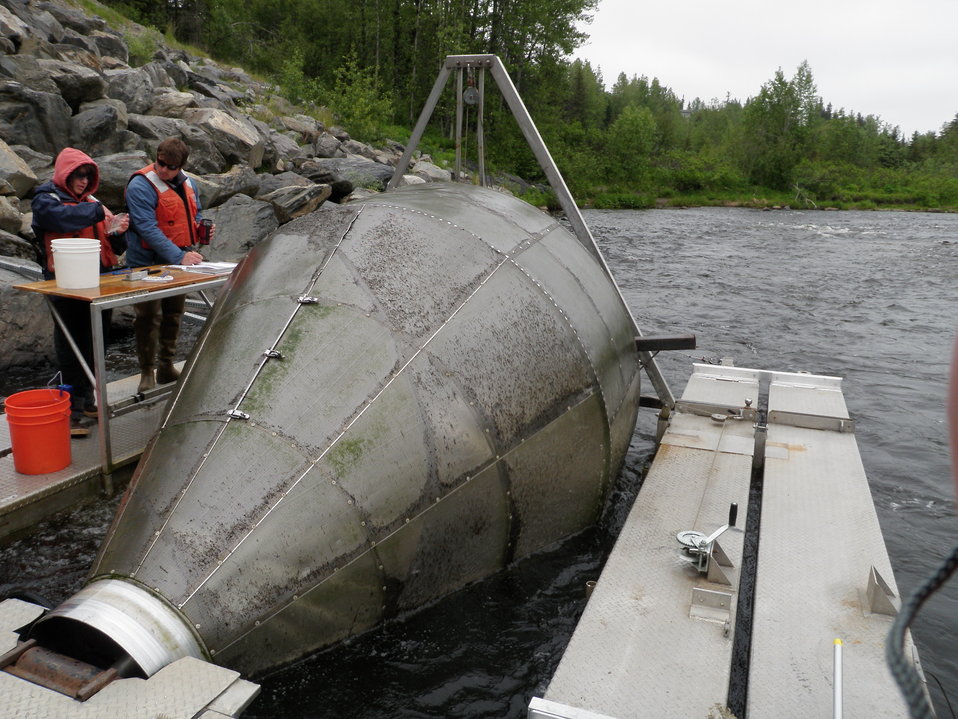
Kenai Refuge, AK